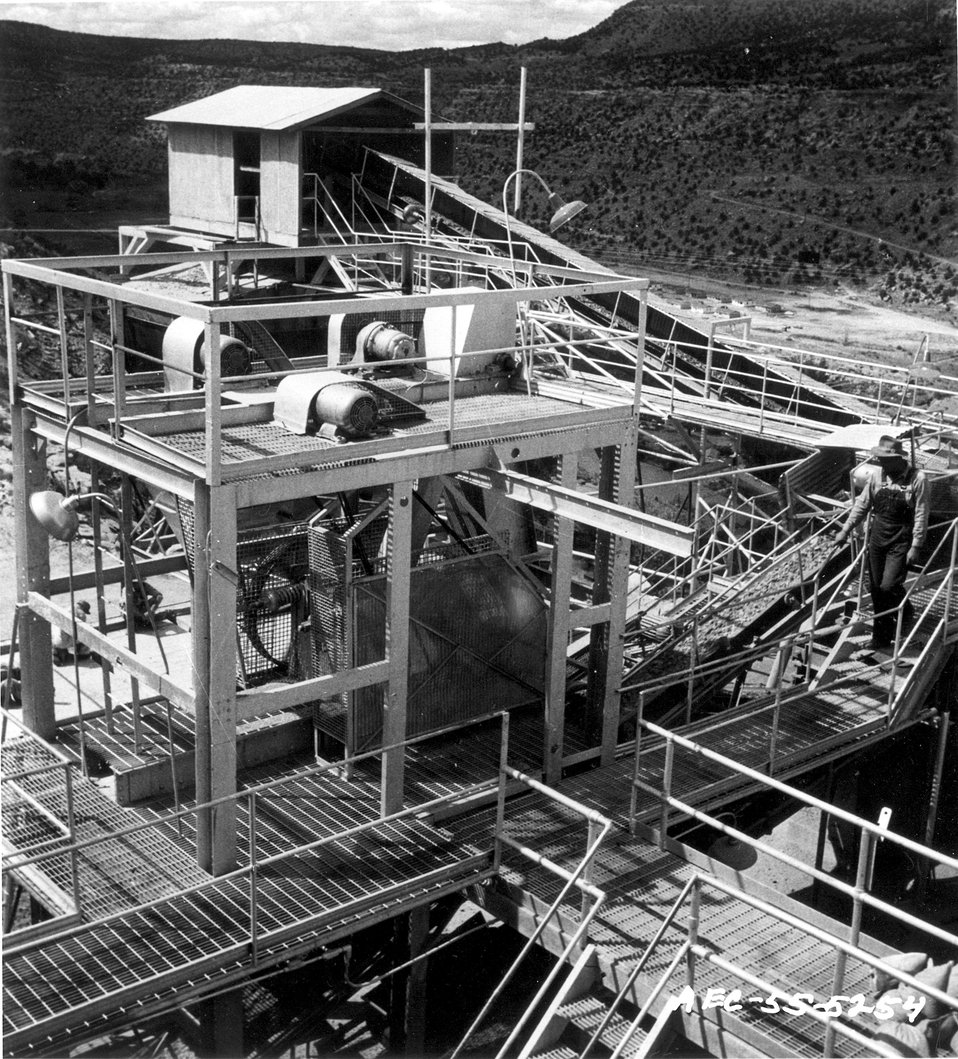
Each load of uranium ore brought by truckers to the Uranium, Colorado, processing mill of the United States Vanadium Company is carried by conveyors through this intricate and precise sampling equipment. c. 1955